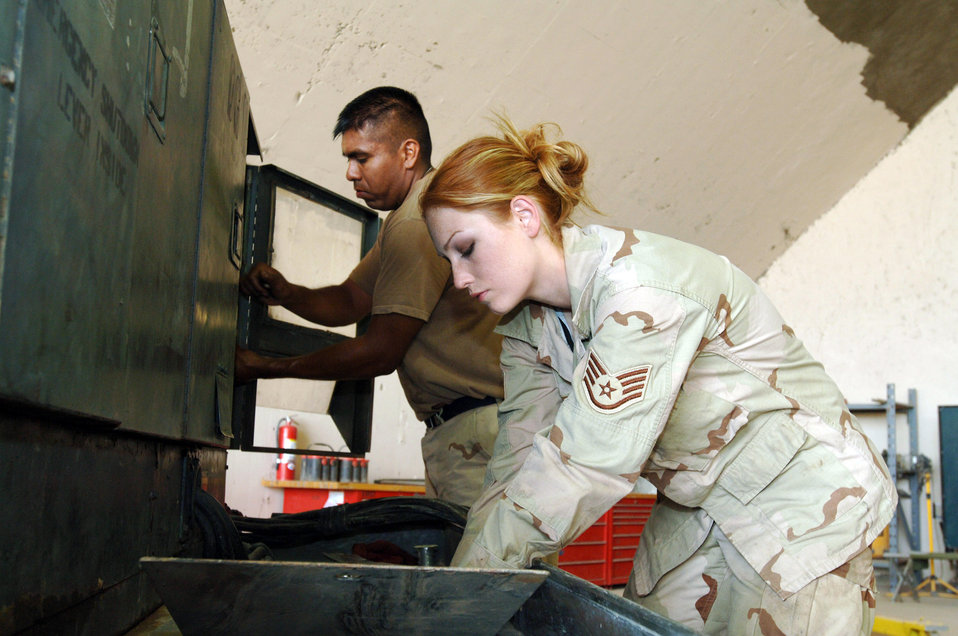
Aerospace Ground Equipment

ALI BASE, Iraq -- Staff Sgts. Jose Barraza (left) and Michele Calton work on a diesel generator that powers up aircraft on the flightline here. They are assigned to the 777th Expeditionary Aircraft Maintenance Squadron's aerospace ground equipment flight.